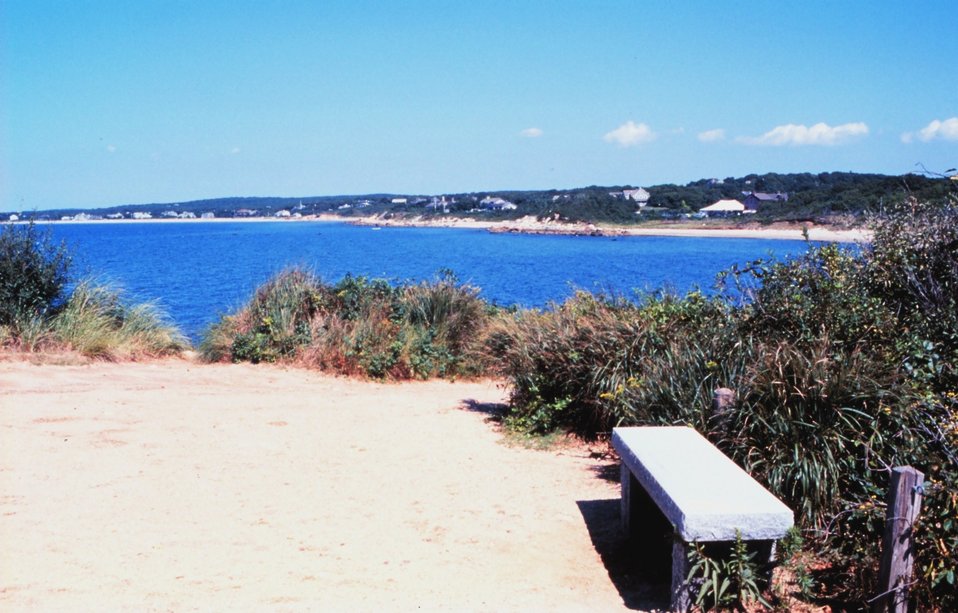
Looking at Buzzards Bay from The Knob, Woods Hole